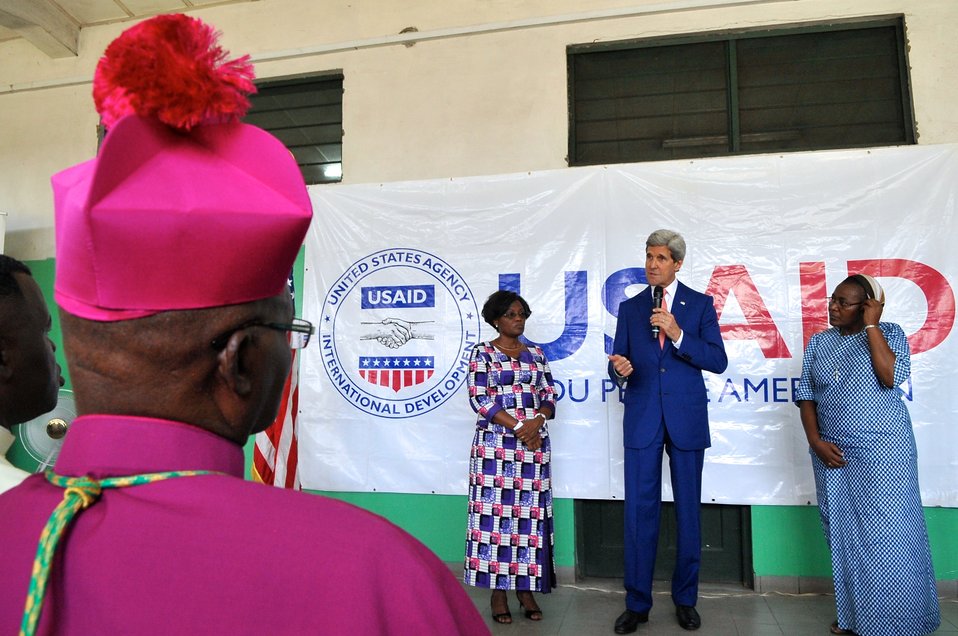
Secretary Kerry Condemns Gender-Based Violence During Tour of Fistula Clinic in Kinshasa

U.S. Secretary of State John Kerry speaks against gender-based violence and lauds a USAID-funded Fistula Clinic while visiting St. Joseph's Hospital in Kinshasa, Democratic Republic of Congo, on May 4, 2014.